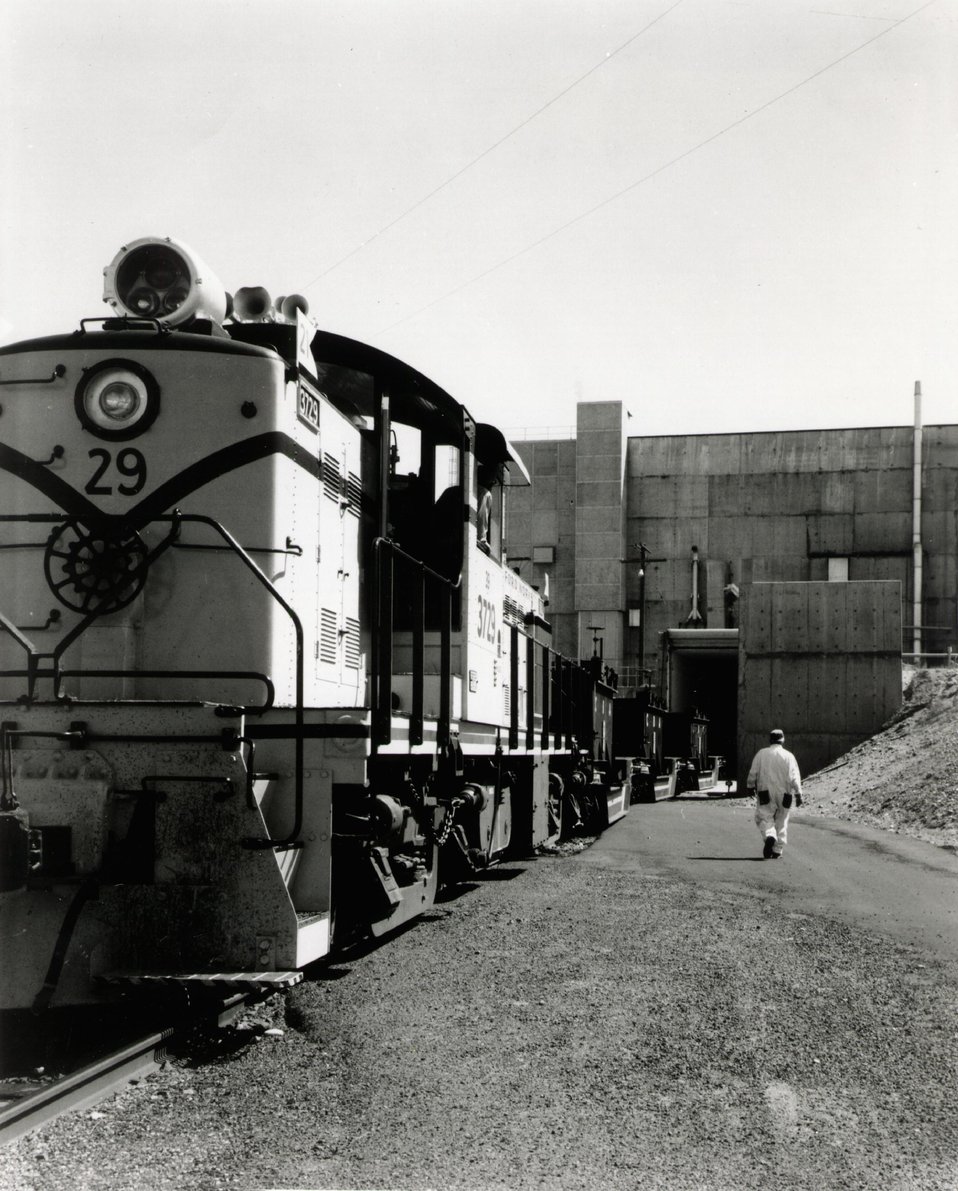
A string of well cars is backed into a chemical processing building at the AEC's Hanford atomic project in southeastern Washington State. c.1970